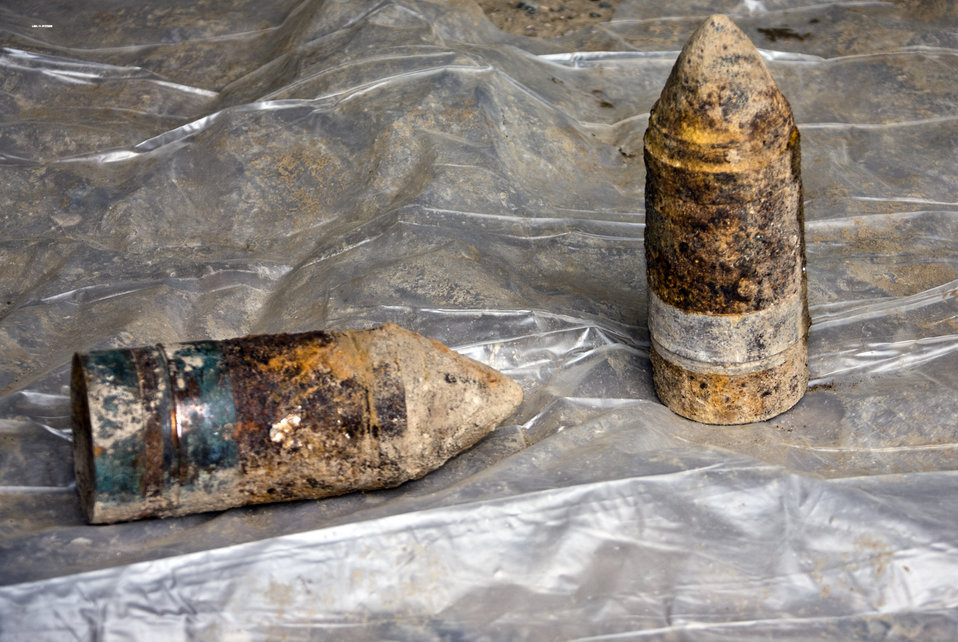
Los Alamos - Excavating a Manhattan Project Waste Site

Crews unearthed four inert artillery shells unexpectedly while excavating Los Alamos National Laboratory’s oldest waste dump.